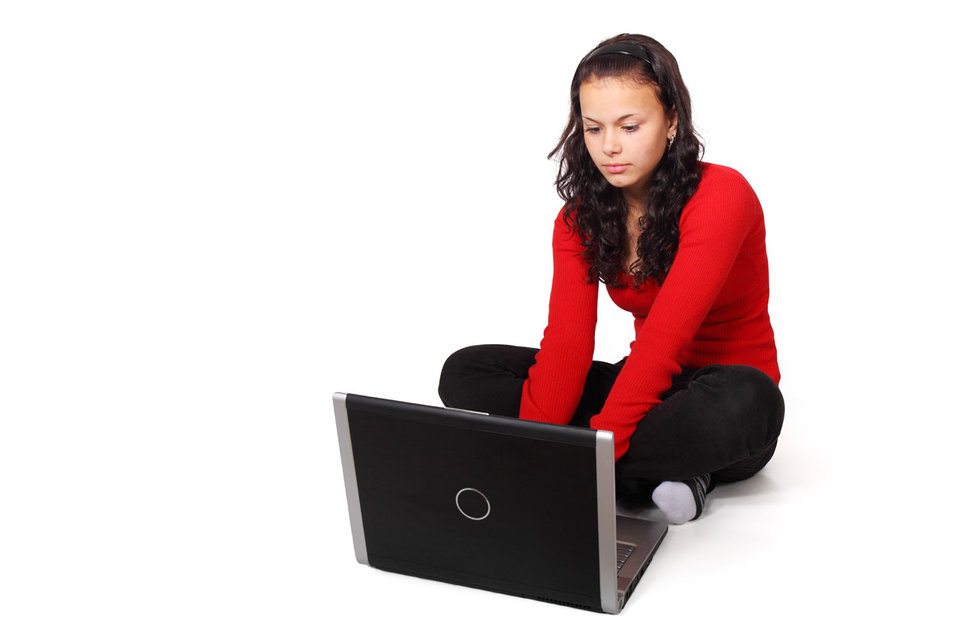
Teenager typing on her laptop isolated on white background.